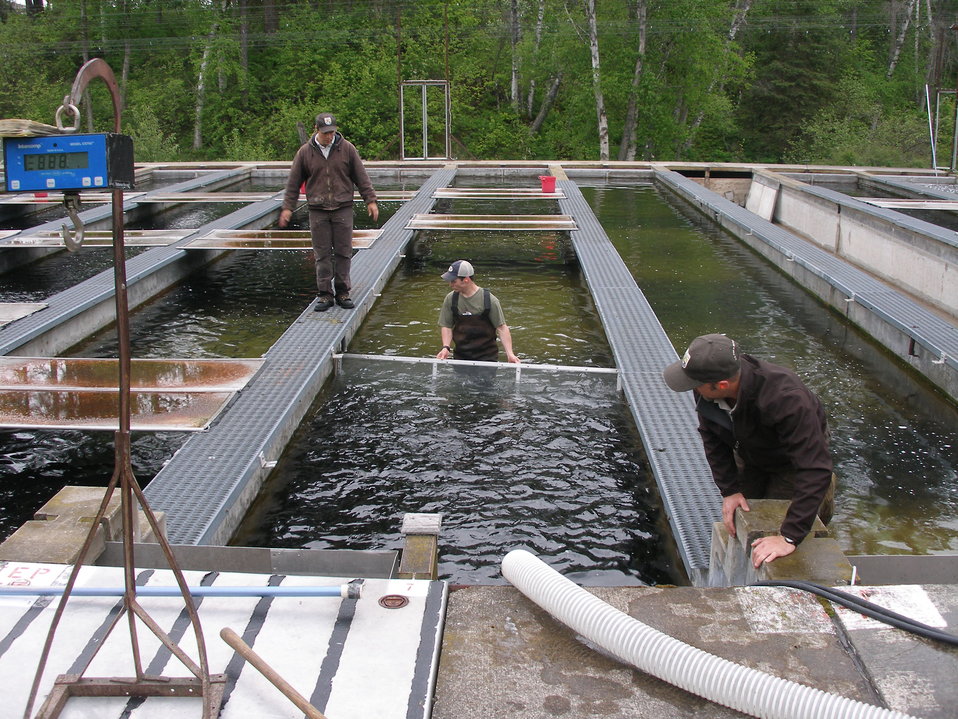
Creston Raceways

Creston National Fish Hatchery staff guide rainbow trout to one end of the raceway to load into a distribution truck in June 2011. Approximately 5,000 fish were taken to the Blackfoot Reservation in Montana.